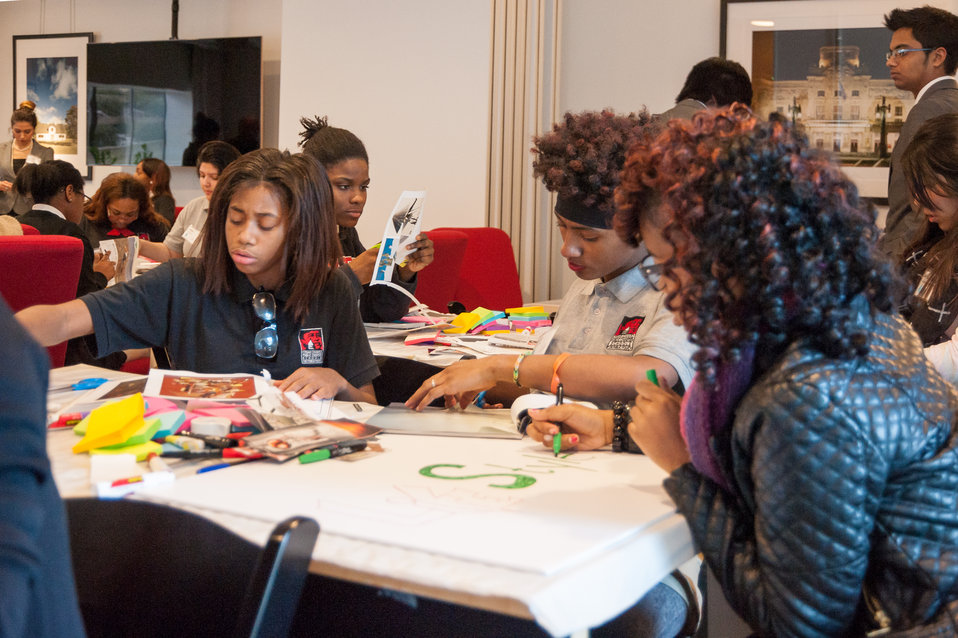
Mentor NDFW Event 2014

Mentor Foundation USA, in partnership with the National Institute on Drug Abuse (NIDA) and other key partners hosted a Youth Drug Facts Rally at the House of Sweden on Thursday, 30th January 2014. Approximately 200 students from five local high schools attended and had the opportunity to interact with top U.S. scientific experts and inspiring guest speakers to “shatter the myths” about drugs and substance abuse, while pledging to stay drug-free.